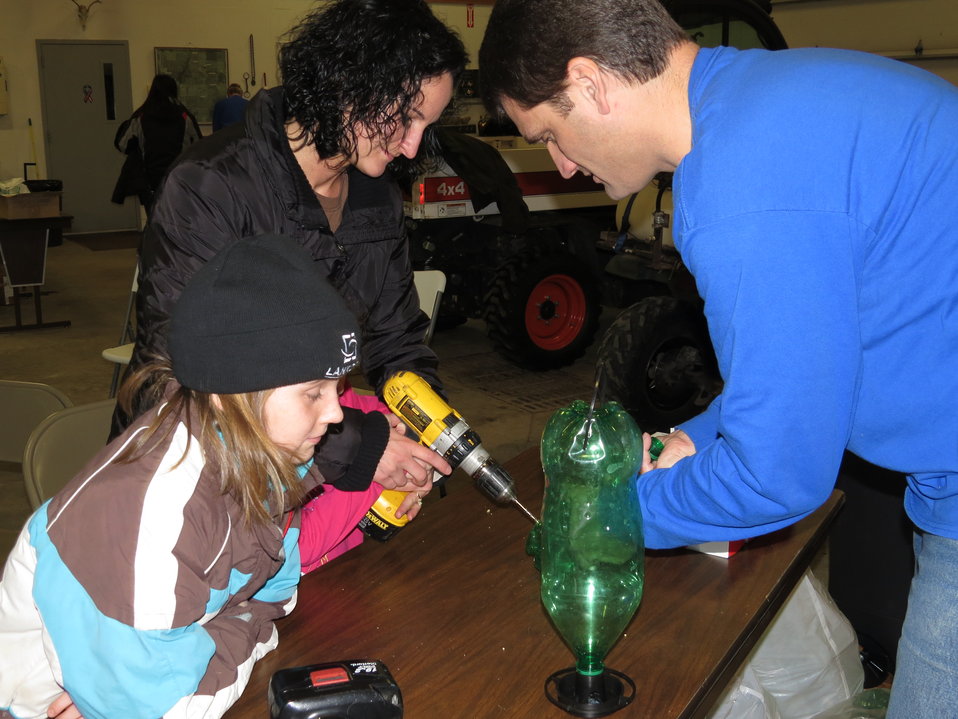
Winterfest 2013

Creating bird feeders out of recycled pop bottles.